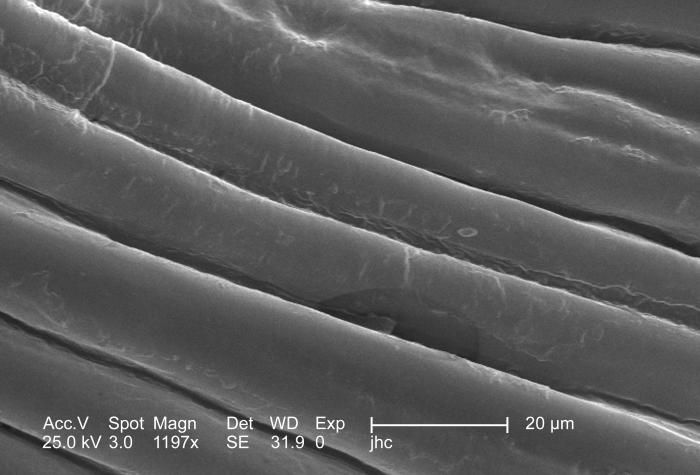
Under a moderately high magnification of 1197x, this 2006 scanning electron micrograph (SEM) depicted an enlarged view of the chitinous, exoskeletal surface of a male louse, Pediculus humanus var. corporis. In this particular view, there are no visible exoskeletal adnexae, which are quite often complex in shape, and variable in size, with forms following functions, which are just as varied. The exoskeleton is composed of chitin, a molecule made up of bound units of acetylglucosamine, which is joined in such a way as to allow for increased points at which hydrogen bonding can occur. In this way chitin provides increased strength, and durability as an exoskeletal foundation.